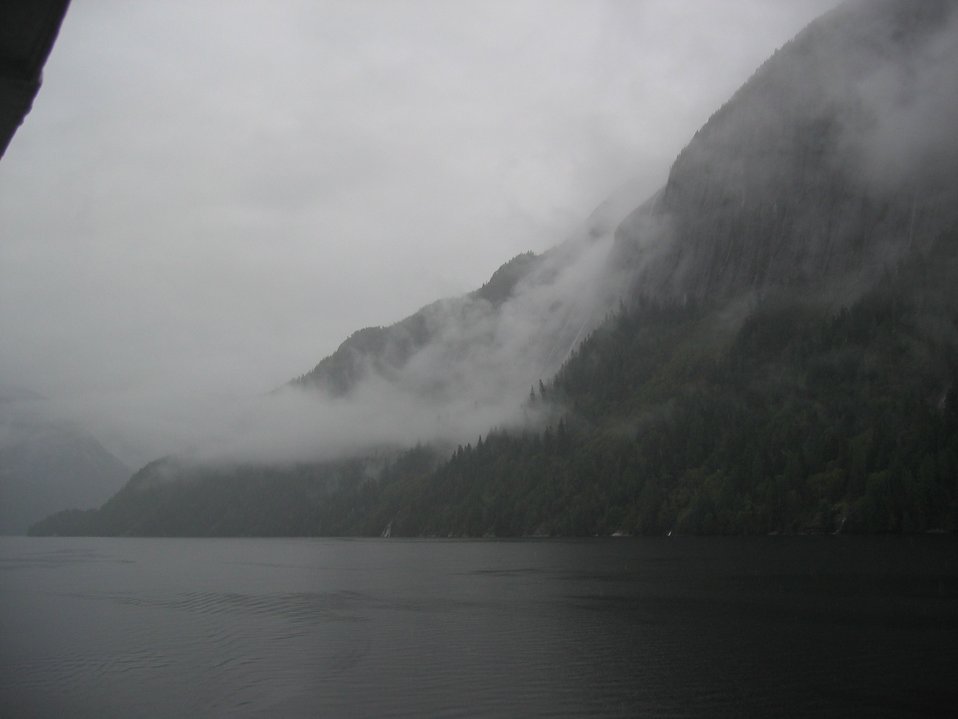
Mountains, mist and sea.